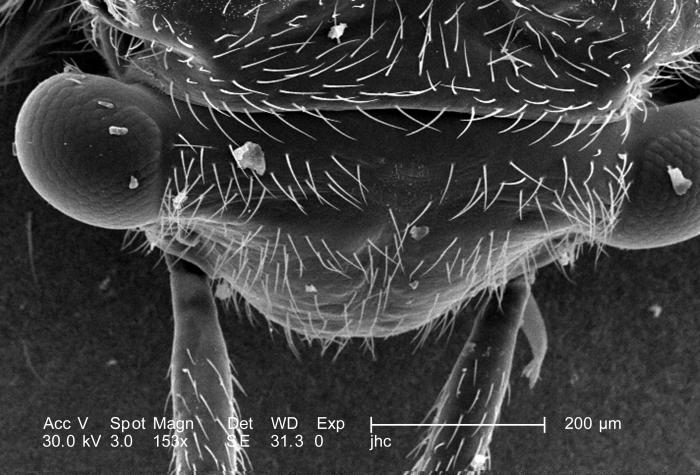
Under a low magnification of 153X, this scanning electron micrograph (SEM) depicted a number of morphologic structures found emanating from the head region of what was an unidentified 1/4"-sized black flying insect with a small red mark on its dorsum, found in the suburbs of Decatur, Georgia. As a member of the Phylum Arthropoda, i.e., Arthro = 'jointed', and poda 'leg', this insect sported three pairs of jointed legs, which placed it into the Family, Insecta>.